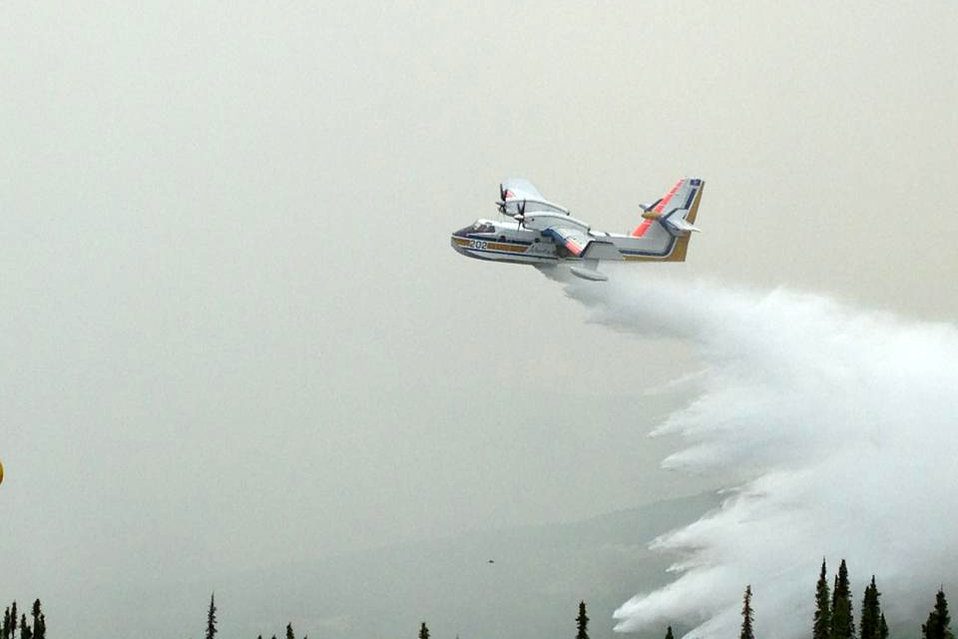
Aircraft makes water drop on Stewart Creek Fire. The Stewart Creek Fire located 25 miles east of North Pole, AK began on Jun. 19, 2013 due to human causes and has consumed an estimated 85,475 acres. The fire is approximately 57% contained.